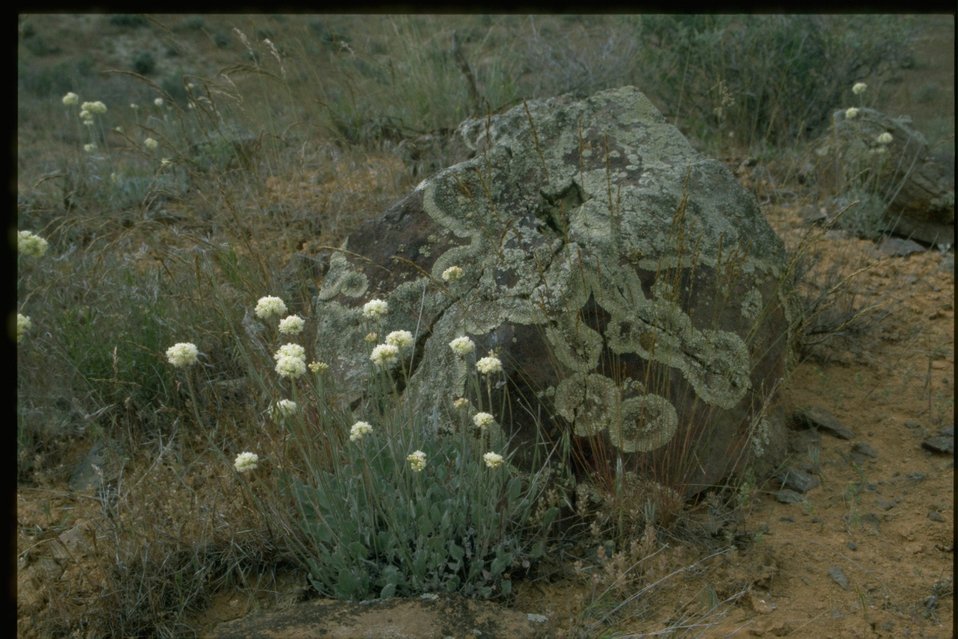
Medium shot of Buckwheat wildflowers and rock lichen.